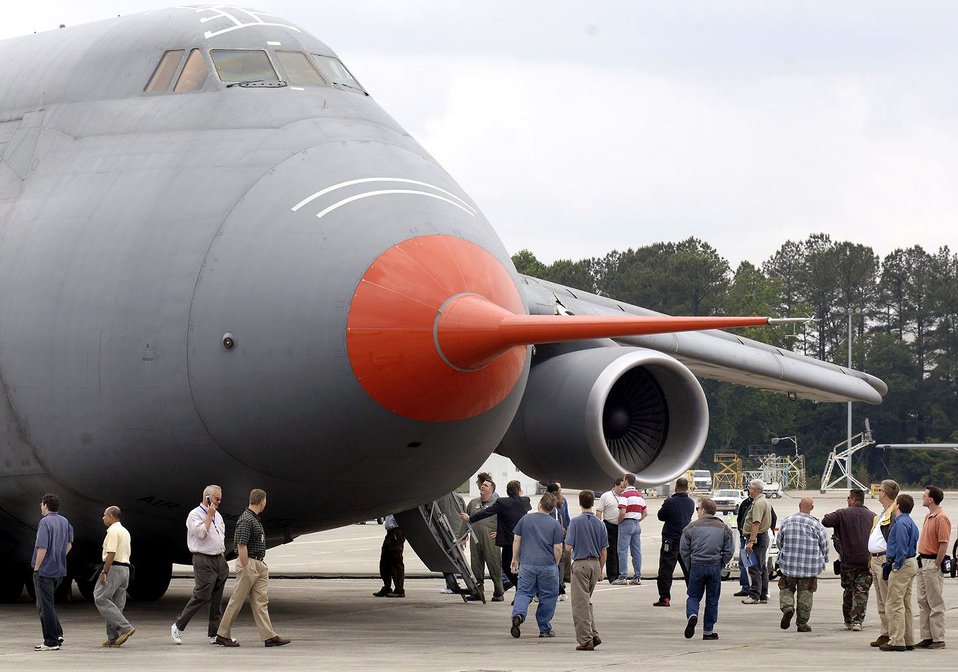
Improved C-5 promises more faithful years of service

Air Force and congressional dignitaries along with local attendees are on hand to celebrate the completion of the first of 111 C-5 aircraft that will undergo modernization at Lockheed Martin?s facility in Marietta, Ga. The rollout ceremony was held May 17, 2006.